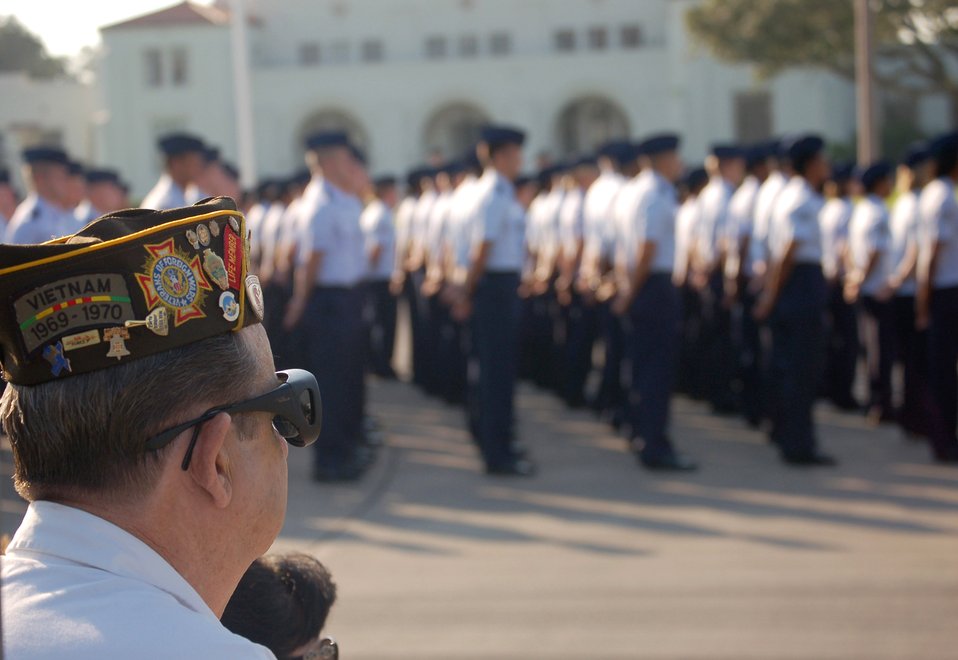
POW/MIA Day: Remembering those who are not home

Retired Staff Sgt. Douglas Poole watches during the Prisoner of War/Missing in Action recognition ceremony held Sept. 21 at Randolph Air Force Base, Texas. The ceremony was part of National POW/MIA Recognition Day. Sergeant Poole was an Air Force heavy equipment operator.